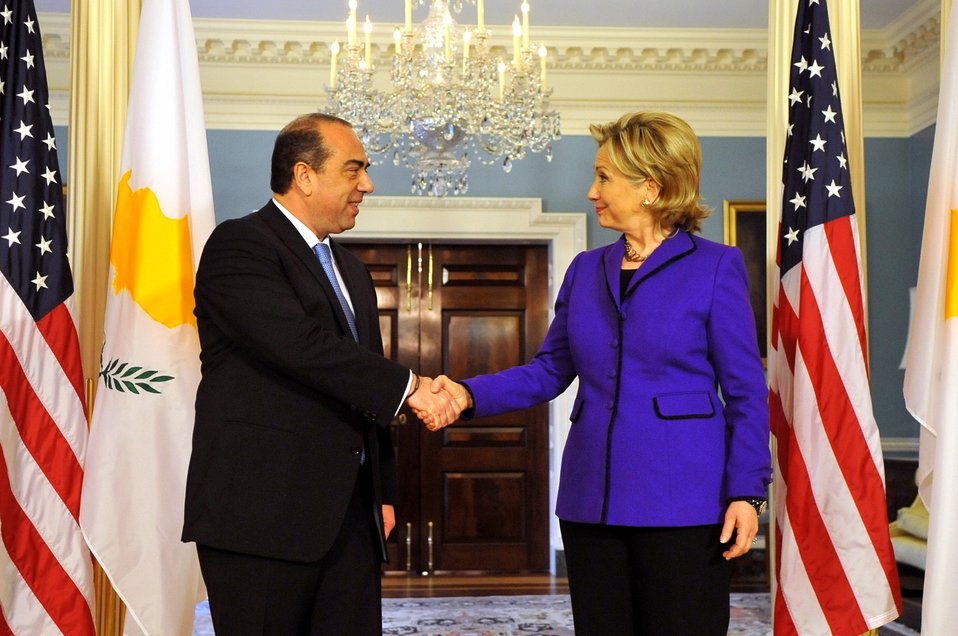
Secretary Clinton With Foreign Minister Kyprianou of Cyprus

U.S. Secretary of State Hillary Rodham Clinton shakes hands with Foreign Minister Kyprianou of Cyprus during a bilateral meeting at the U.S. Department of State, Washington, DC March 26, 2010.